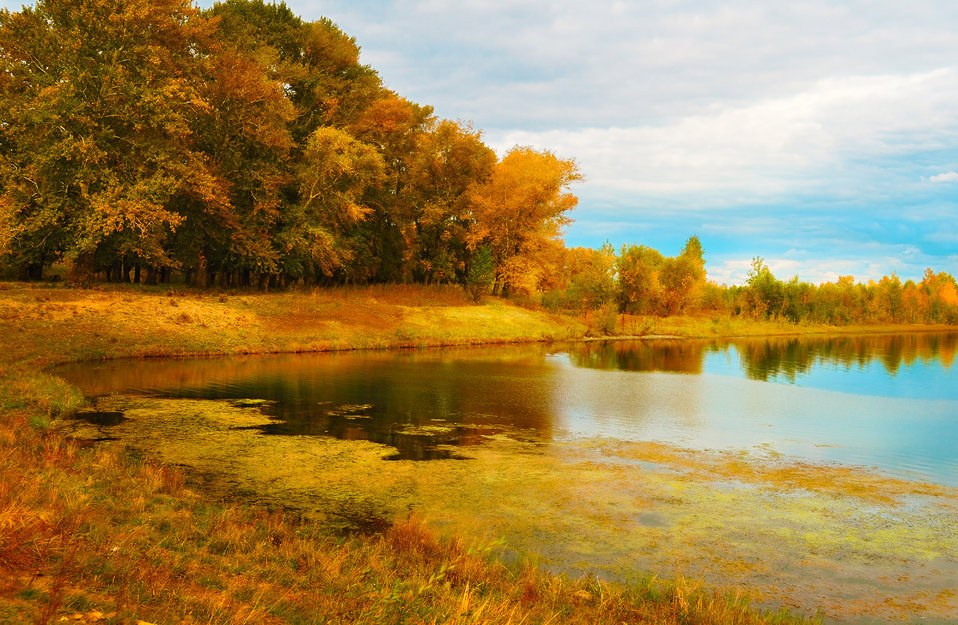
River bank in autumn.